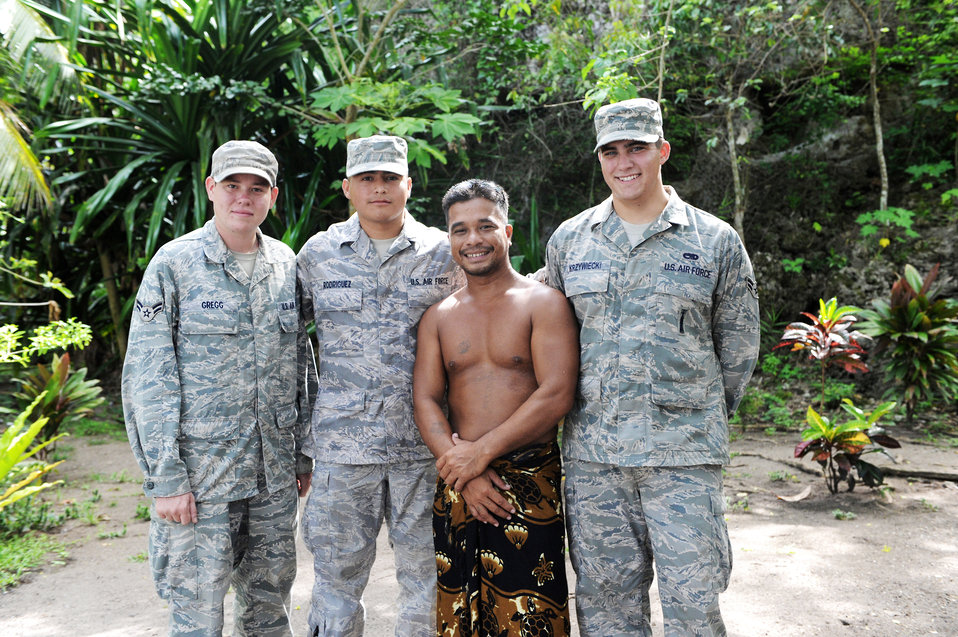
Airmen save local man's life, cite training

Airmen 1st Class Mark Gregg, Caleb Rodriguez and Kylle Krzywiecki stand with Christensen Kimi from the island of Chuuk, at Fai Fai Beach in Guam. The Airmen saved Mr. Kimi from drowning in and underwater cave March 27, 2010. It was the first time the Airmen got to see him since the accident and he and his employers took the opportunity to thank them for saving his life. Airman Krzywiecki, Gregg and Rodriguez are assigned to the 36th Munitions Squadron at Andersen Air Force Base, Guam.